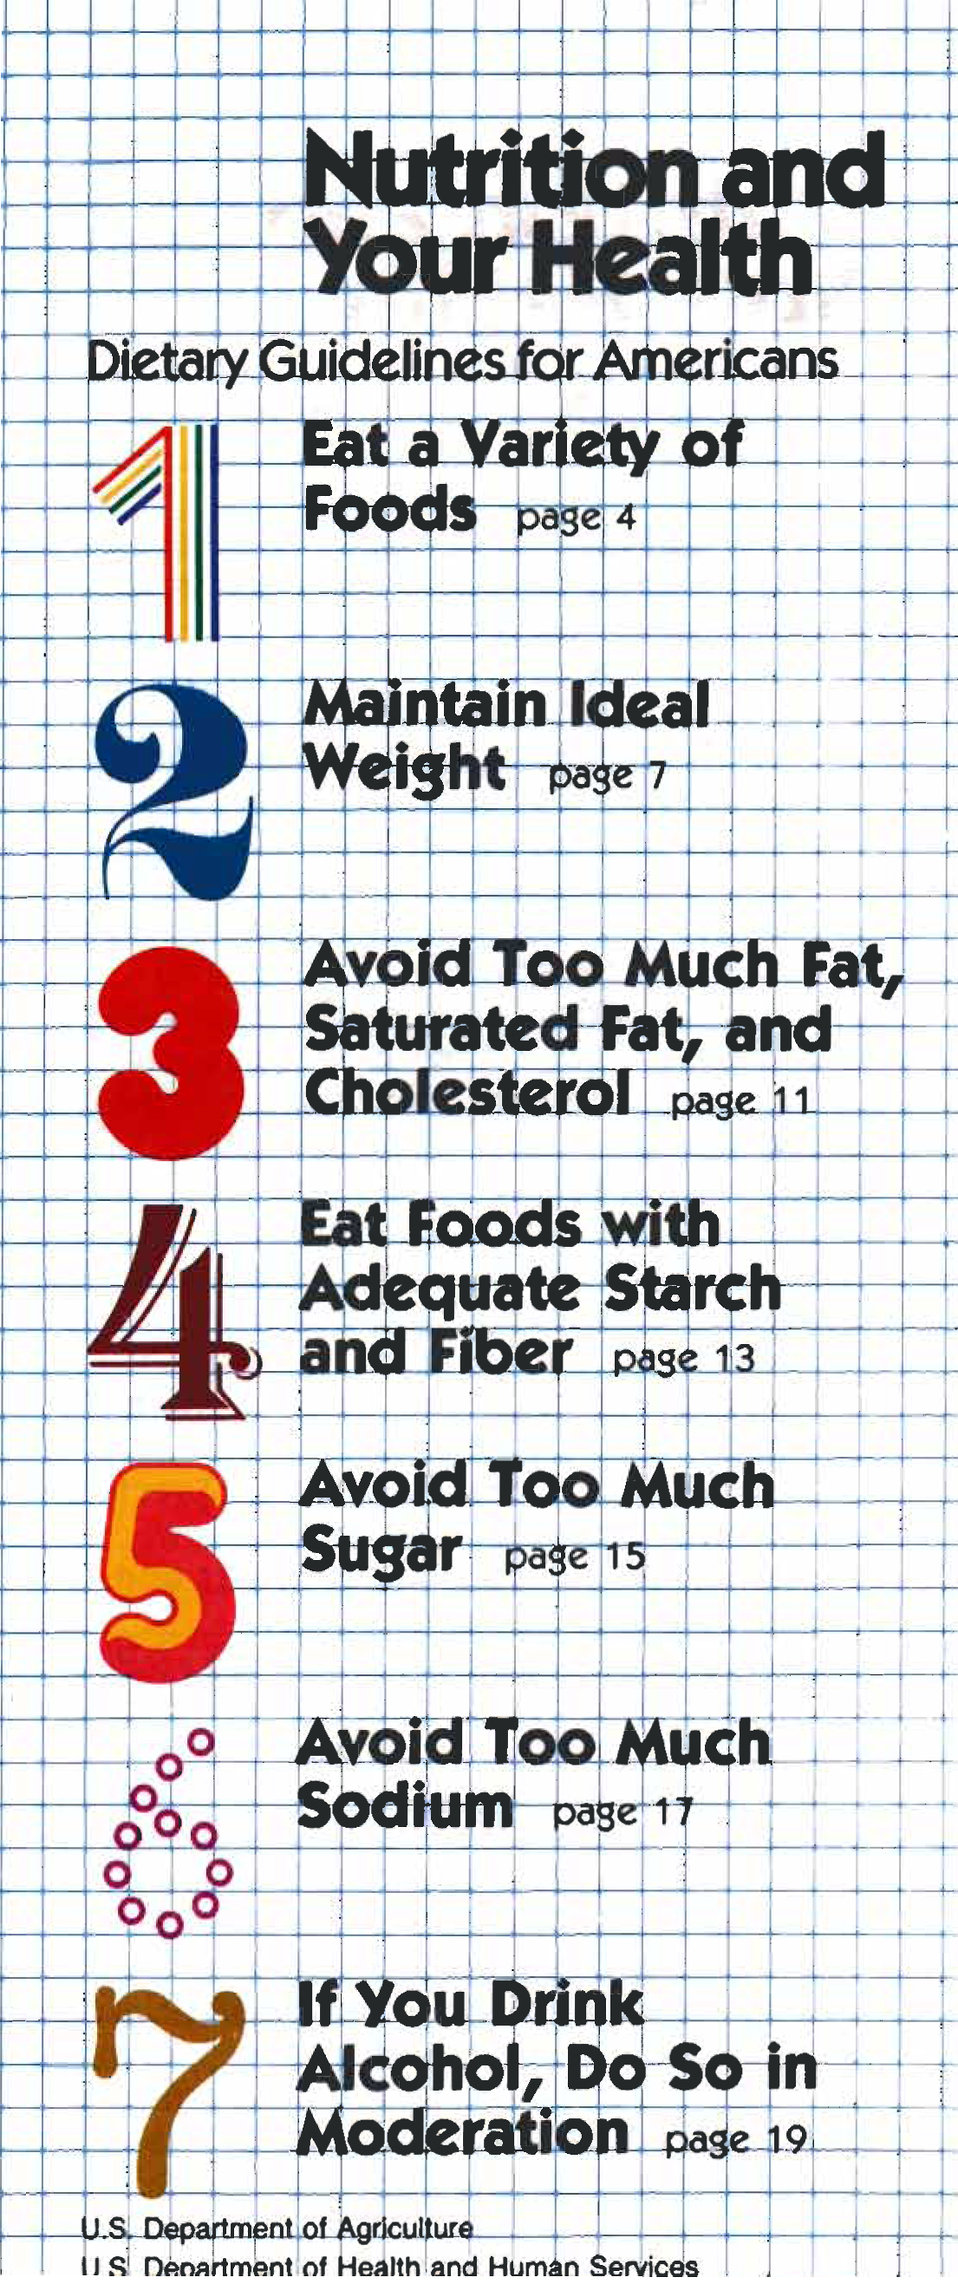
This the cover of the 1980 Dietary Guidelines for Americans produced by the Center for Nutrition Policy and Promotion Service (CNNP).